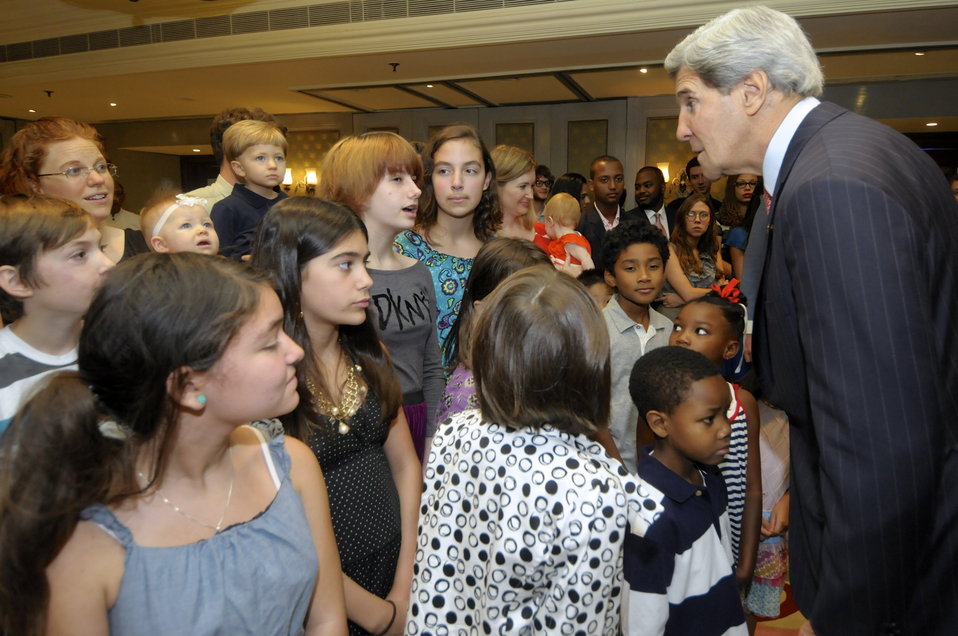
Secretary Kerry Greets Embassy New Delhi Staff

U.S. Secretary of State John Kerry addresses the children of employees at the U.S. Embassy in New Delhi, India, during a staff meet-and-greet on June 25, 2013.